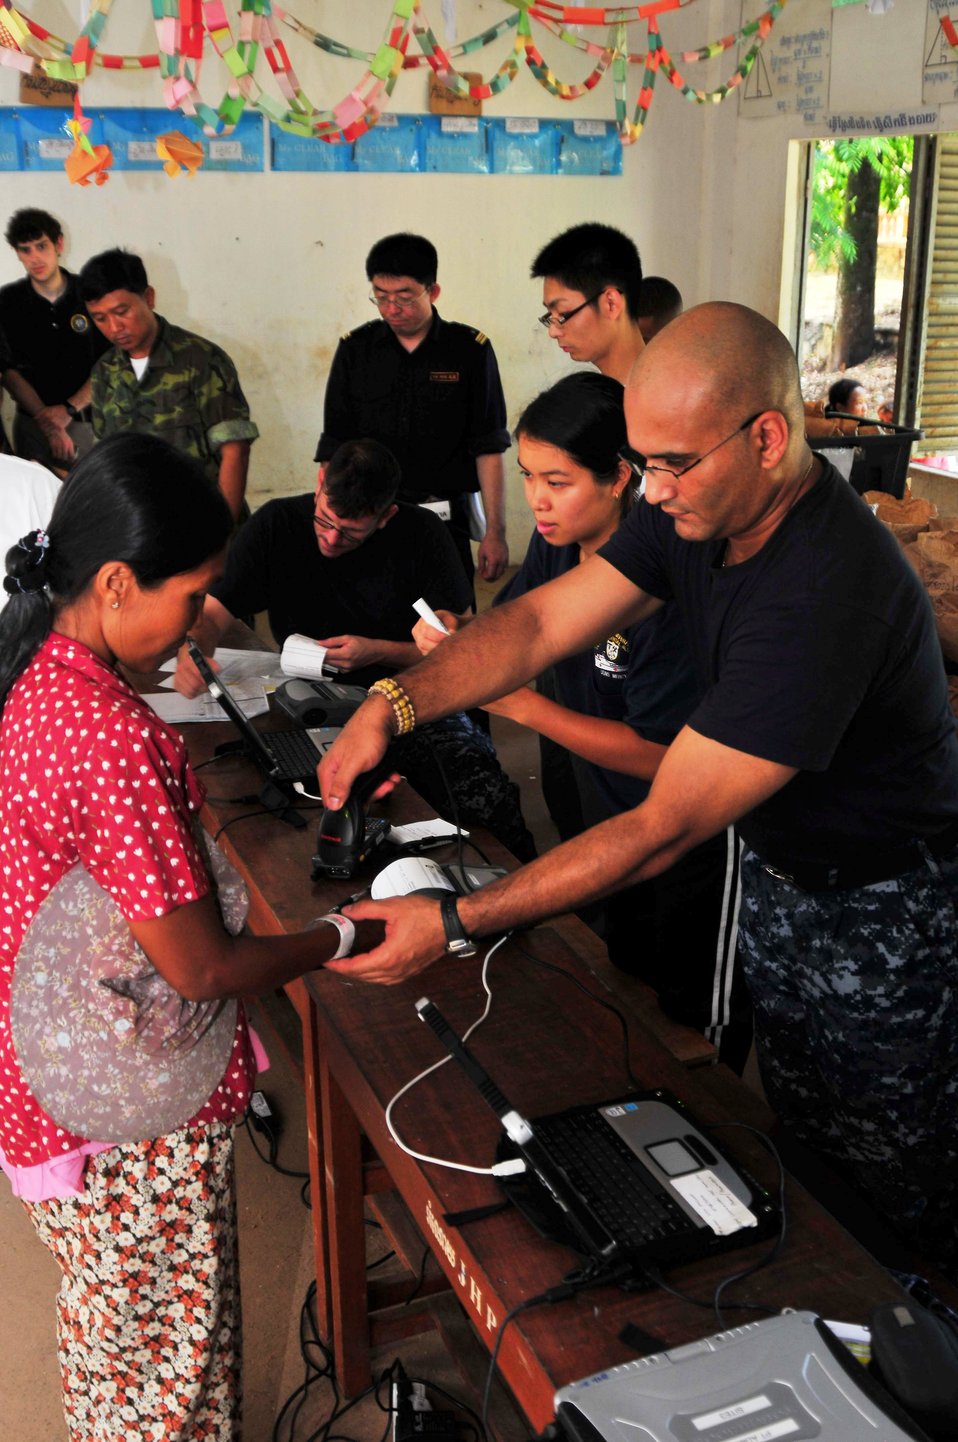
Hospital Corpsman 2nd Class Shawn Hayes Scans a Patient’s ID Bracelet

Hospital Corpsman 2nd Class Shawn Hayes scans a patient’s identification bracelet during a medical civic action program in support of Pacific Partnership 2010 on June 24, 2010, in Sihanoukville, Cambodia. The Military Sealift Command hospital ship USNS Mercy (T-AH 19) is in Cambodia conducting the fifth in a series of annual U.S. Pacific Fleet humanitarian and civic assistance endeavors to strengthen regional partnerships.